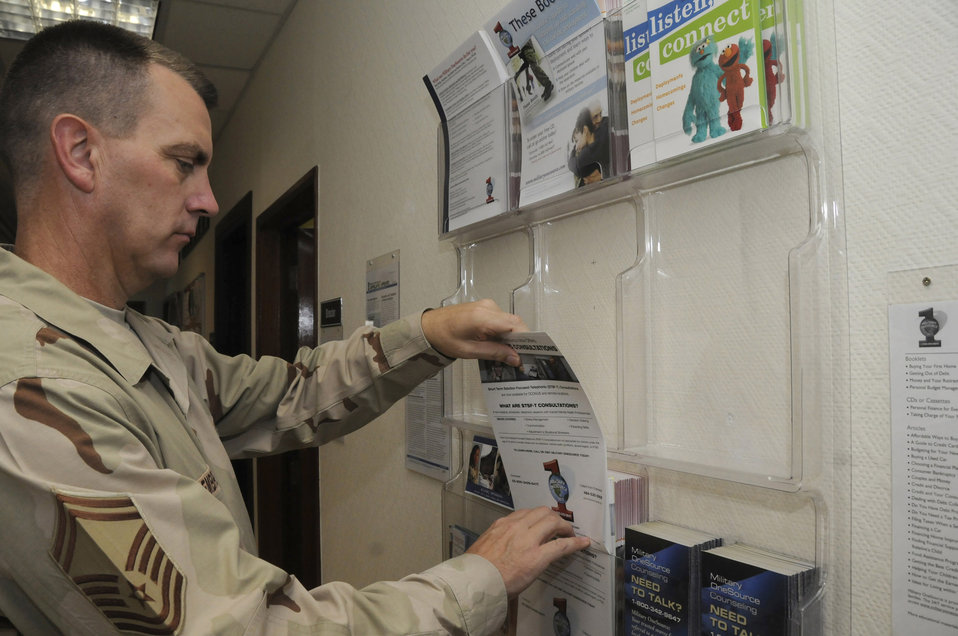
Operations Iraqi Freedom, Enduring Freedom and Joint Task Force-Horn of Africa

Senior Master Sgt. Grant Embrey restocks pamphlets for customers here Sept. 22. Sergeant Embrey and the other ARC members maintain the only Airmen Readiness Center in the entire area of responsibility. Sergeant Embrey is superintendent of the 379th Expeditionary Force Support Squadron Airmen Readiness Center.